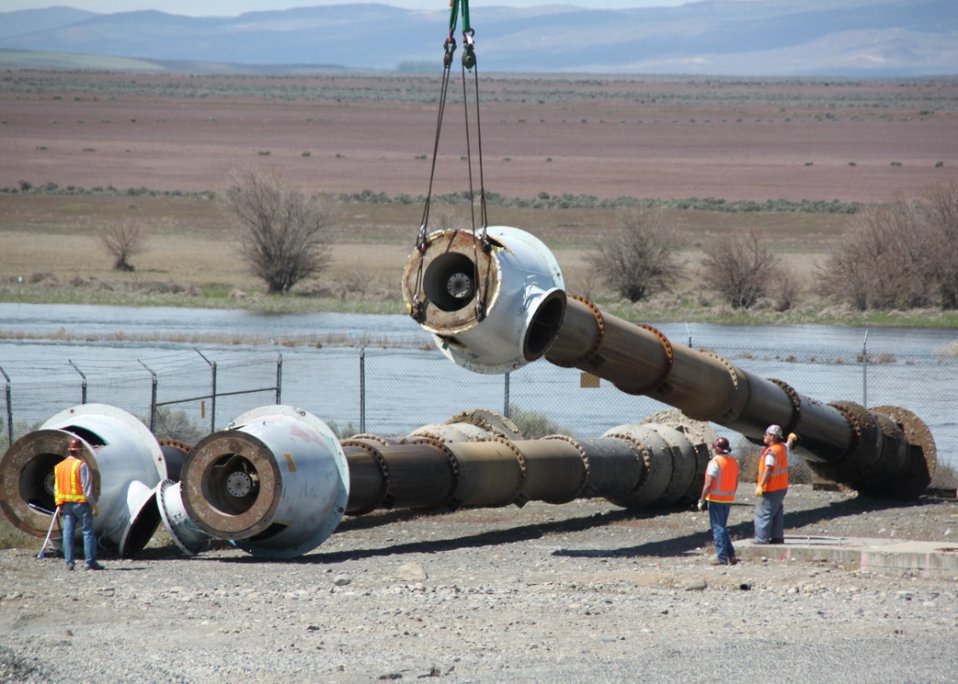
Recovery Act Funds Lead Way to Hanford Cleanup

Pump structures from the 181-KE River Pump House are lowered via crane after removal from the riverside structure. The structures will be cut up and disposed at Hanford’s Environmental Restoration Disposal Facility.